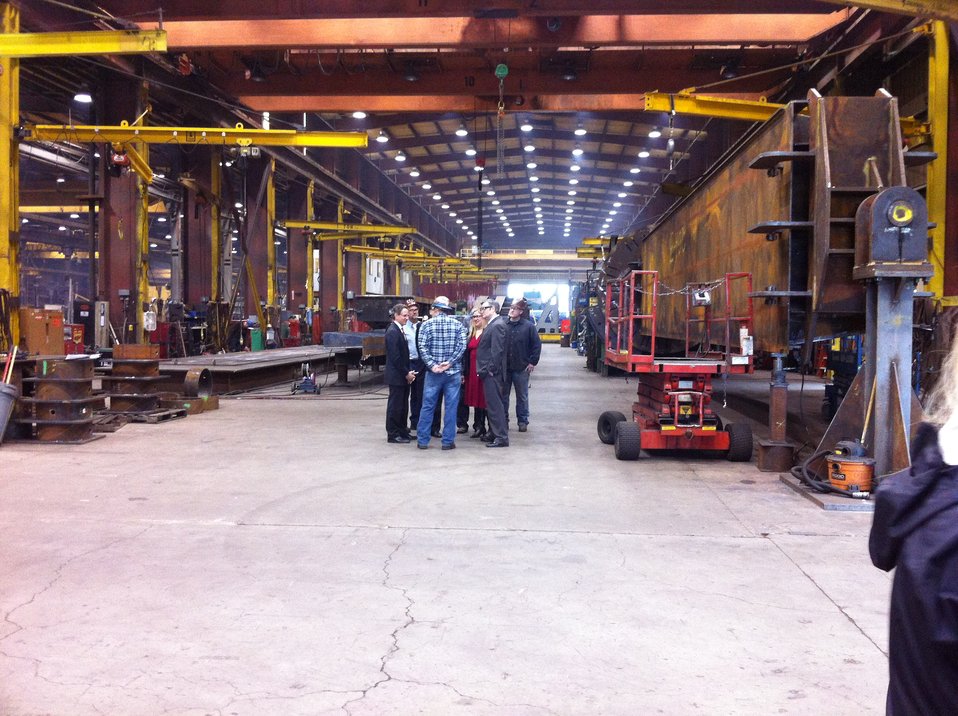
Treasury Secretary Geithner Visits Oregon Iron Works

President of Oregon Iron Works Corey Yraguen gave Treasury Secretary Tim Geithner a tour of the Oregon Iron Works facility. Oregon Iron Works is a privately held small business that got its start in 1944 and builds products ranging from complex bridges to streetcars. Today it has grown to employ more than 400 workers with more than $100 million in annual sales.